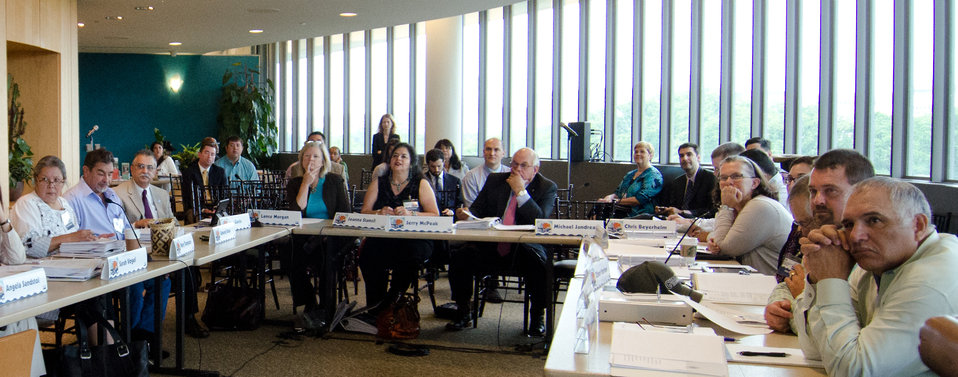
Suzanna Palmieri (black sweater and blue blouse), Chief of Staff to Agriculture Deputy Secretary Kathleen Merrigan and Council members view a video greeting from Deputy Secretary Merrigan, during the first business meeting of the U.S. Department of Agriculture's (USDA) Council for Native American Farming and Ranching (CNAFR), held on Tuesday, Aug. 14, 2012 at the National Museum of the American Indian, in Washington, D.C. CNAFR was created to advise the Secretary on ways to eliminate barriers to participation for Native American Farmers and Ranchers in USDA programs. The Council was established as part of the Keepseagle settlement, and is conducted under the oversight of USDA's Office of Tribal Relations, which is part of the Office of the Secretary of Agriculture. The Director of Tribal Relations Joanna Mounce Stancil serves as Designated Federal Official (DFO) for the Council.